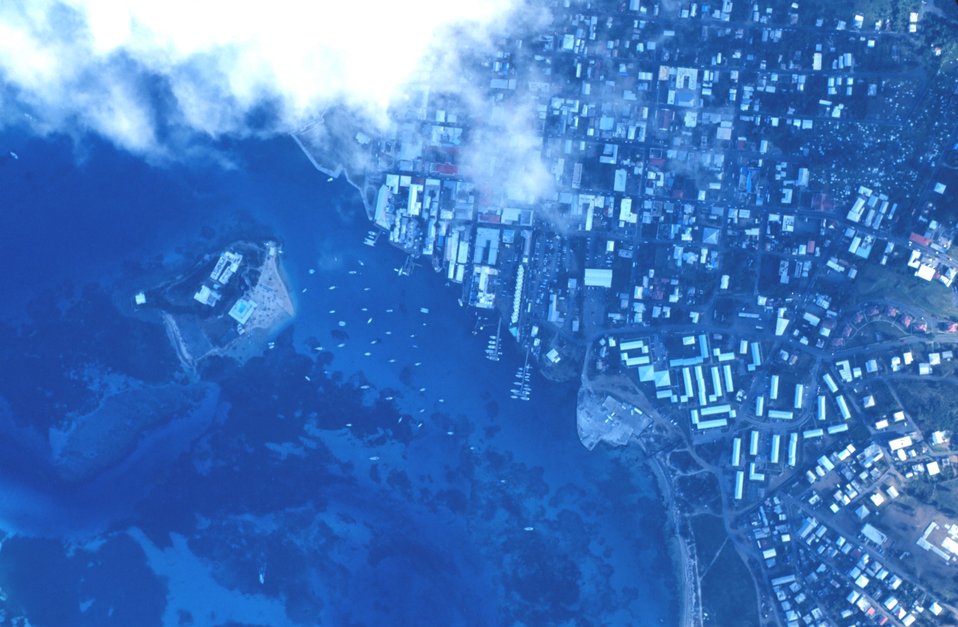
A view of Christiansted.